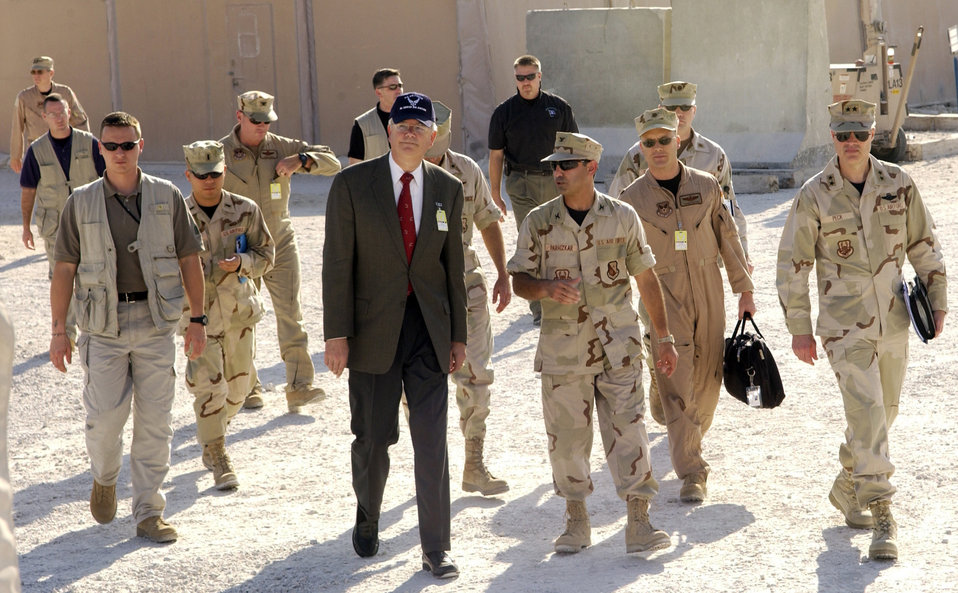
Desert duty

SOUTHWEST ASIA (AFPN) -- Secretary of the Air Force Michael W. Wynne goes on a tour with Col. Mohsen Parhizkar, the commander of the 379th Expeditionary Mission Support Group. This is Secretary Wynne's first tour to the region.